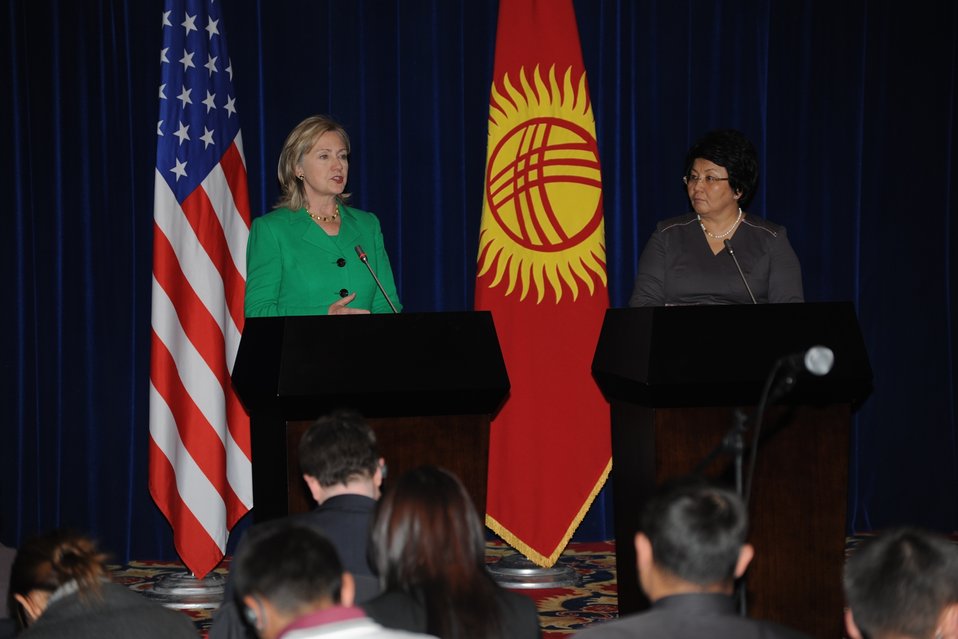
Secretary Clinton and Kyrgyz President Otunbaeva Hold a Press Conference

U.S. Secretary of State Hillary Rodham Clinton and Kyrgyz President Roza Otunbaeva hold a press conference at the Ala Archa Presidential Residence in Kyrgyzstan on December 2, 2010.